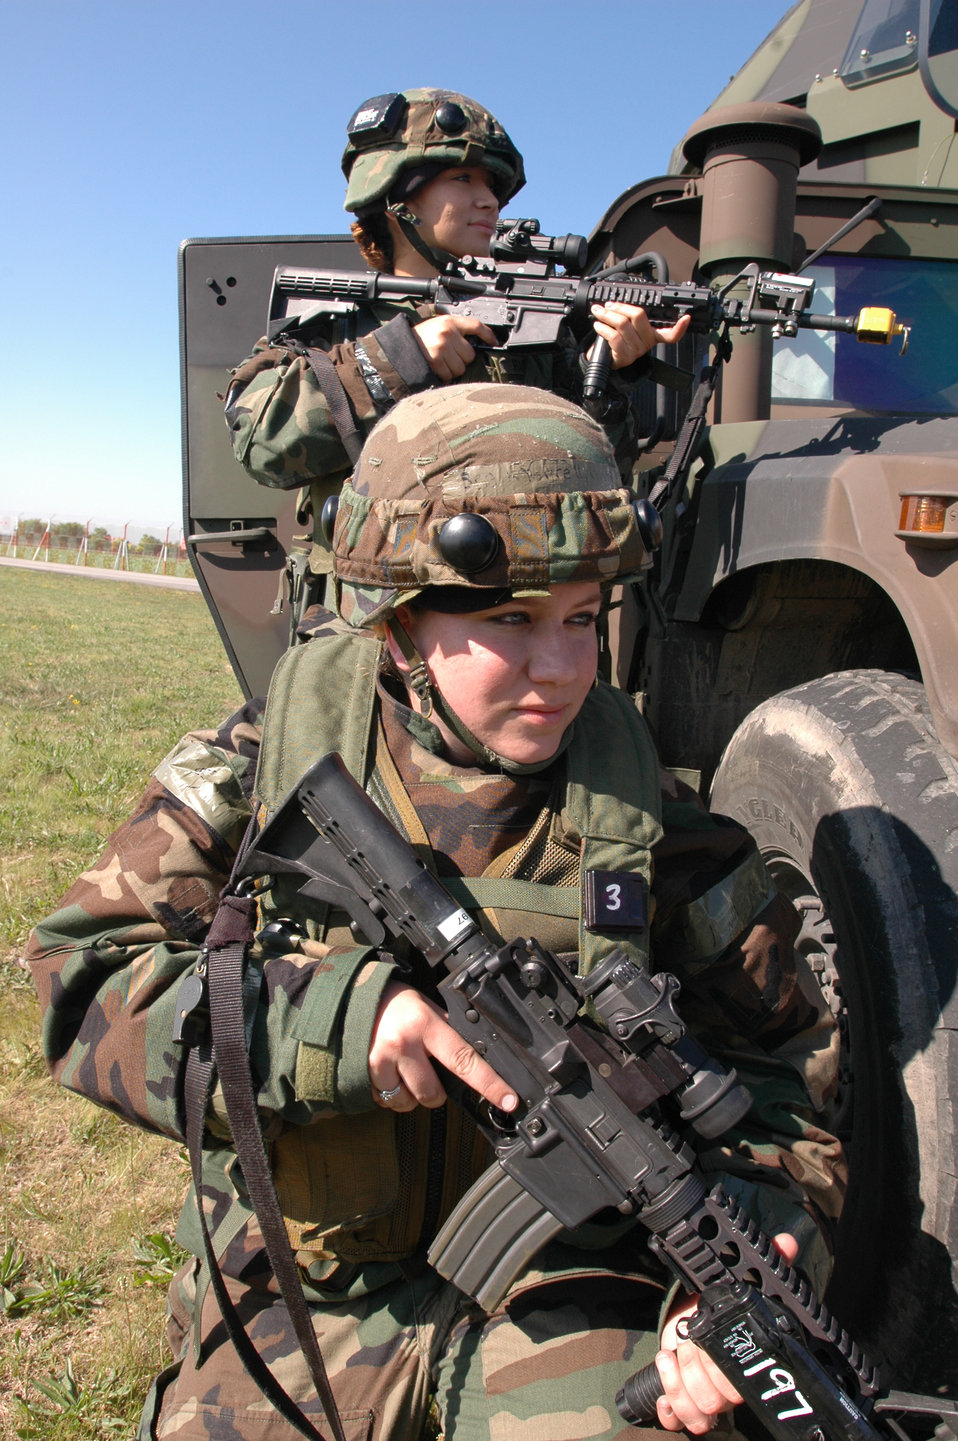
Local Salty Nation exercise

Senior Airmen Kristi Morrell and Erika Rascon provide security during exercise Local Salty Nation at Aviano Air Base, Italy, on Wednesday, June 7, 2006. The Airmen are with the 31st Security Forces Squadron.